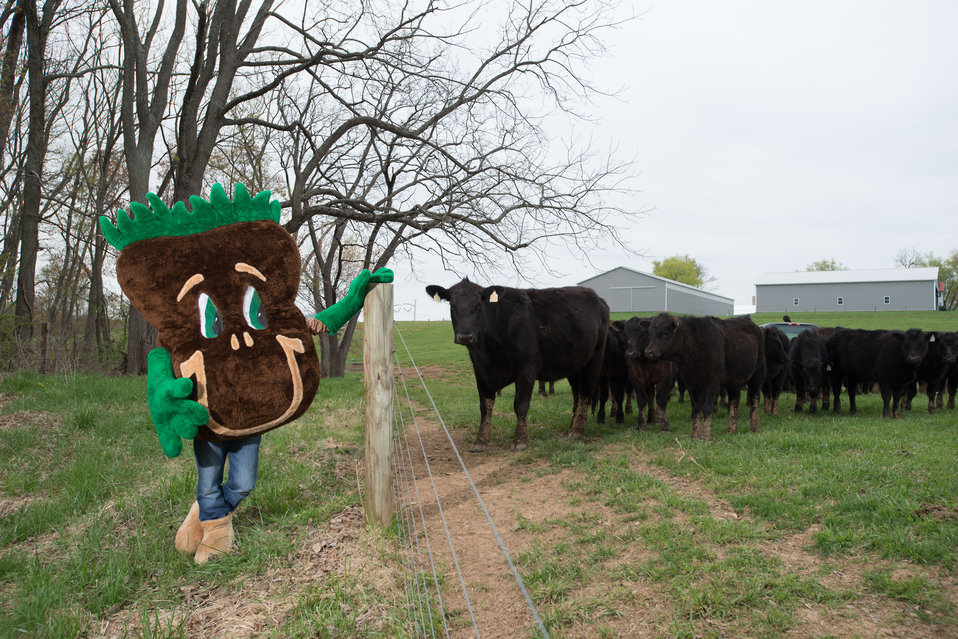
The U.S. Department of Agriculture’s (USDA) Natural Resources Conservation Service (NRCS) mascot Sammy Soil on the Sunny Ridge Farm in Laytonsville, MD on Monday, Apr. 28, 2014. The Sunny Ridge Farm owned by the Stabler family uses a number of conservation practices to promote soil health and water quality. No-till cropping systems use cover crops that help water soak deep into the soil and machines work lightly on top of the soil preserving vertical pores that are water’s pipeline to the roots. Cover crops prevent erosion, improve soil health, hold water, supply nutrients, and suppress weeds and pests. Fenced waterways keep livestock away from the streams and drainage to low points of fields, which allows grass, trees and other vegetation to grow. The plants take up nutrients from the livestock effluent, reducing pollution to waterways. The farm also has a well-designed agrichemical facility for an environmentally safe area to handle and store tanks of on-farm chemicals.